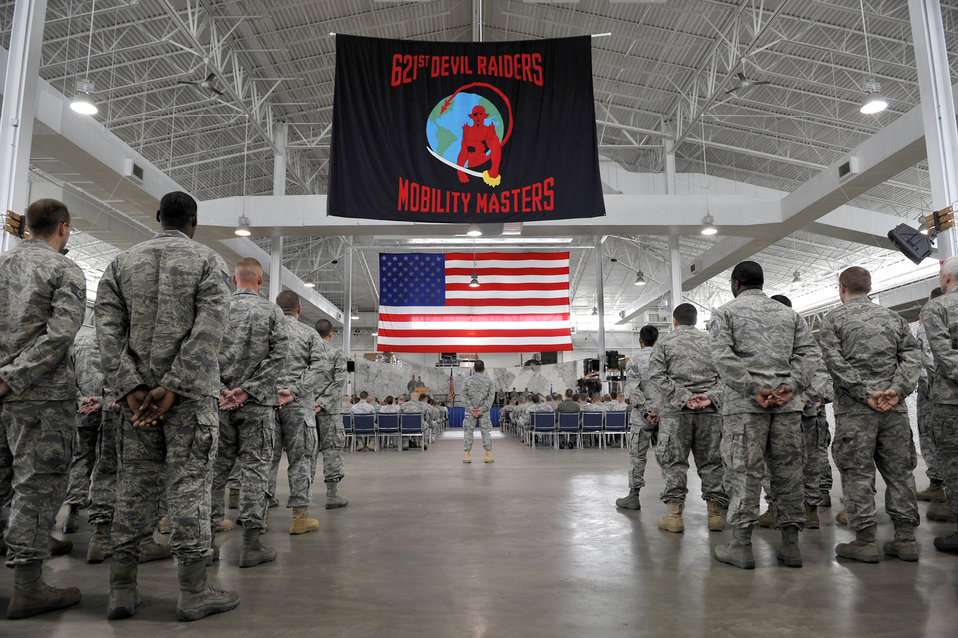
816th CRG

Members of the 816th Contingency Response Group, 621st Contingency Response Wing, observe its inactivation ceremony at the CRW Global Reach Deployment Center June 11, 2010, at Joint Base McGuire-Dix-Lakehurst, N.J. The inactivation is part of an Air Force ordered restructuring that boosts the capabilities of the wing's remaining groups and assists the creation of an Air National Guard CRG.